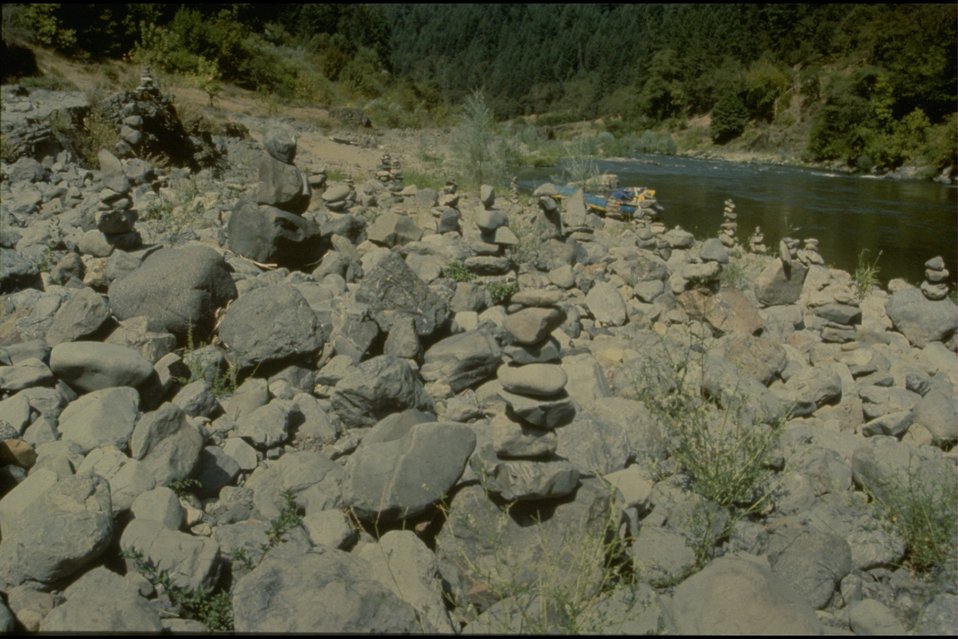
Rogue River - Rock formations at Missouri Bar.